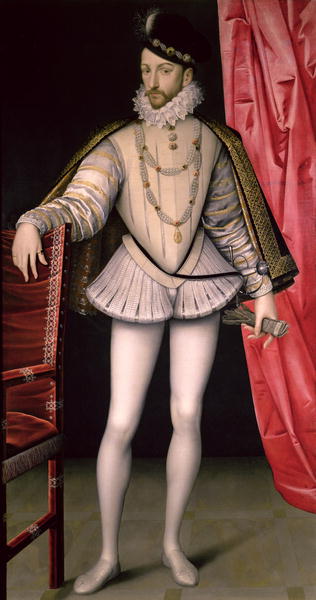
Portrait of Charles IX